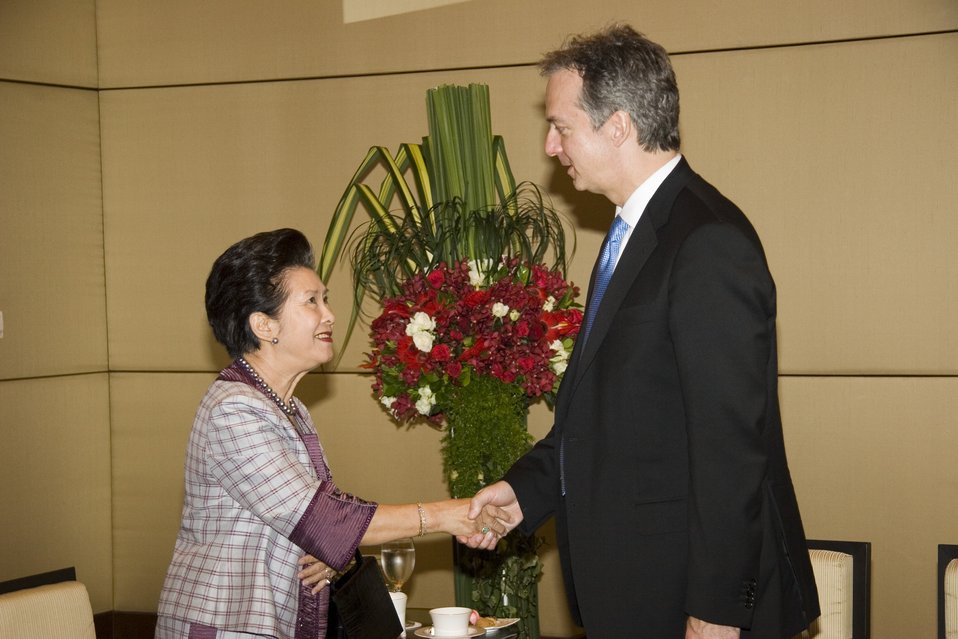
U.S. Ambassador to Thailand Meets With Thai Queen’s Lady-in-Waiting

U.S. Ambassador to Thailand Eric G. John shakes hands with the Queen’s Lady-in-Waiting, Thanpuying Nravadi Chaixanien, at the Conrad Hotel in Bangkok, Thailand July 21, 2009.